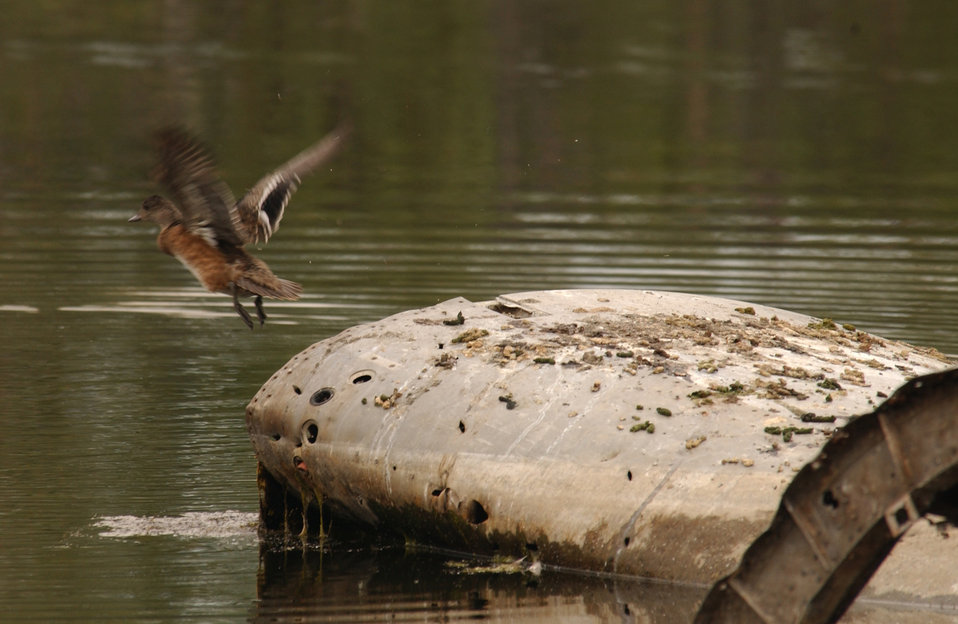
The Lady

EIELSON AIR FORCE BASE, Alaska -- A duck flies from the remnants of a WB-29 Superfortress used at a pond here for open-water extraction training until it became too dangerous.